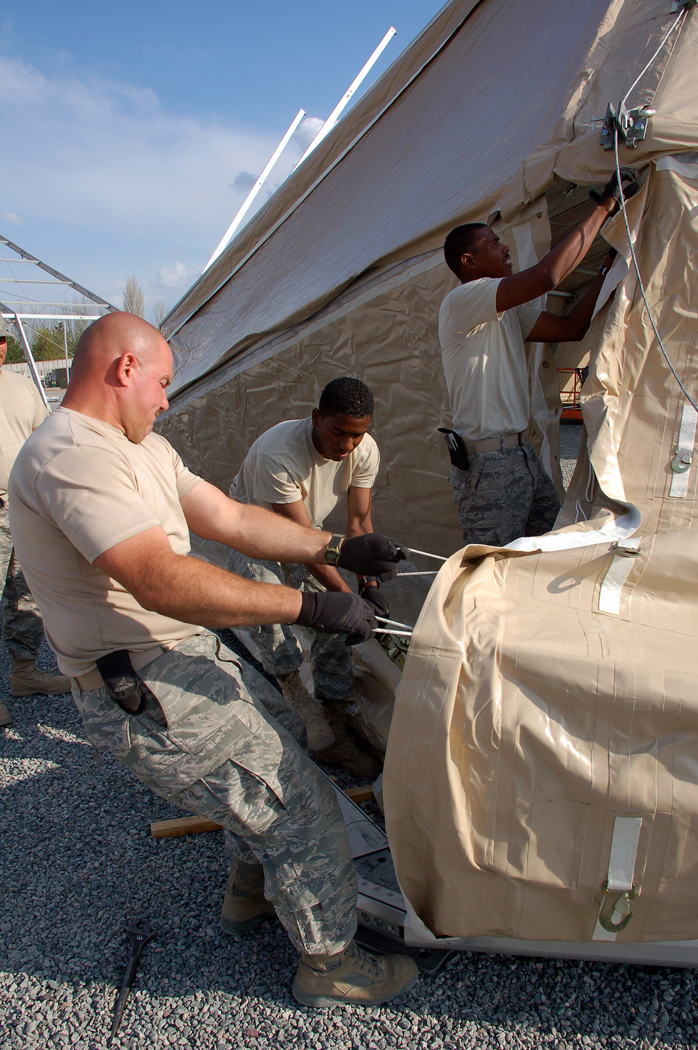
BEAR builds new quarters for forces at Manas

Master Sgt. Ryan Yeggy and Senior Airman Alii Chun pull together the front flaps of a 4,000 square-foot dome shelter while Staff Sgt. Timothy Robinson laces the panels together during a construction project April 1 at Manas Air Base, Kyrgyzstan. Two of the structures are being erected in preparation for the increased number of coalition personnel transiting through Manas to and from Afghanistan. The Airmen are assigned to a nine-person Basic Expeditionary Airfield Resources team deployed to Southwest Asia. All of the team members are deployed from Holloman Air Force Base, N.M.